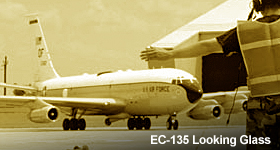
EC-135 Looking Glass

OFFUTT AIR FORCE BASE, Neb. -- Staff Sgt. Edward Torres marshals in an EC-135 aircraft at Offutt AFB, Nebraska